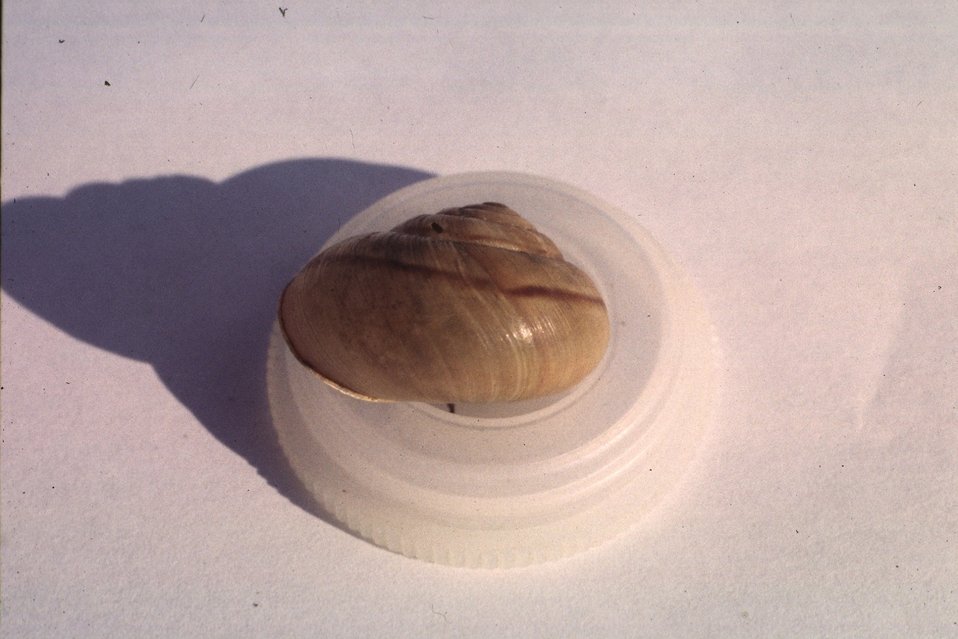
Oregon Shoulderband (Helminthoglypta hertleini).